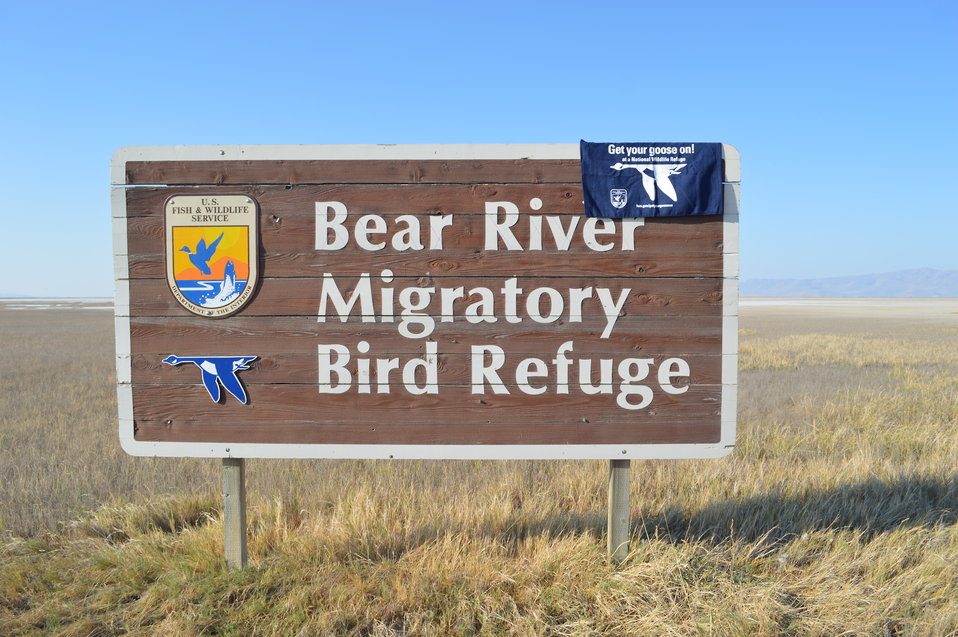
Bear River NWR

The Blue Goose found a friend in Utah.